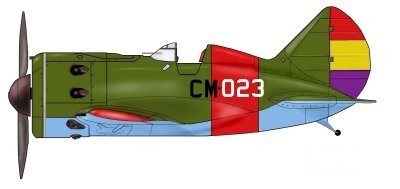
The I-16 Polikarpov No CM-023 flown by FG Tinker in the 1st Sq Moscas with which he shot down the 2 German Bf109B